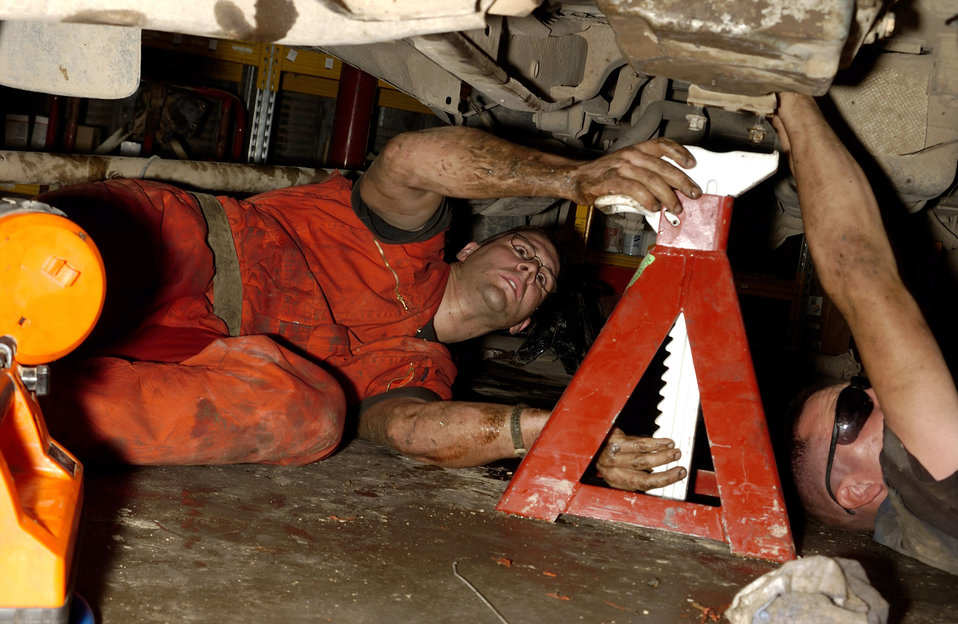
Transmission assembly

KIRKUK AIR BASE, Iraq -- Staff Sgts. Cole Seal and Michael Licata get down and dirty supporting a transmission assembly under a truck here. They are deployed from Dover Air Force Base, Del.